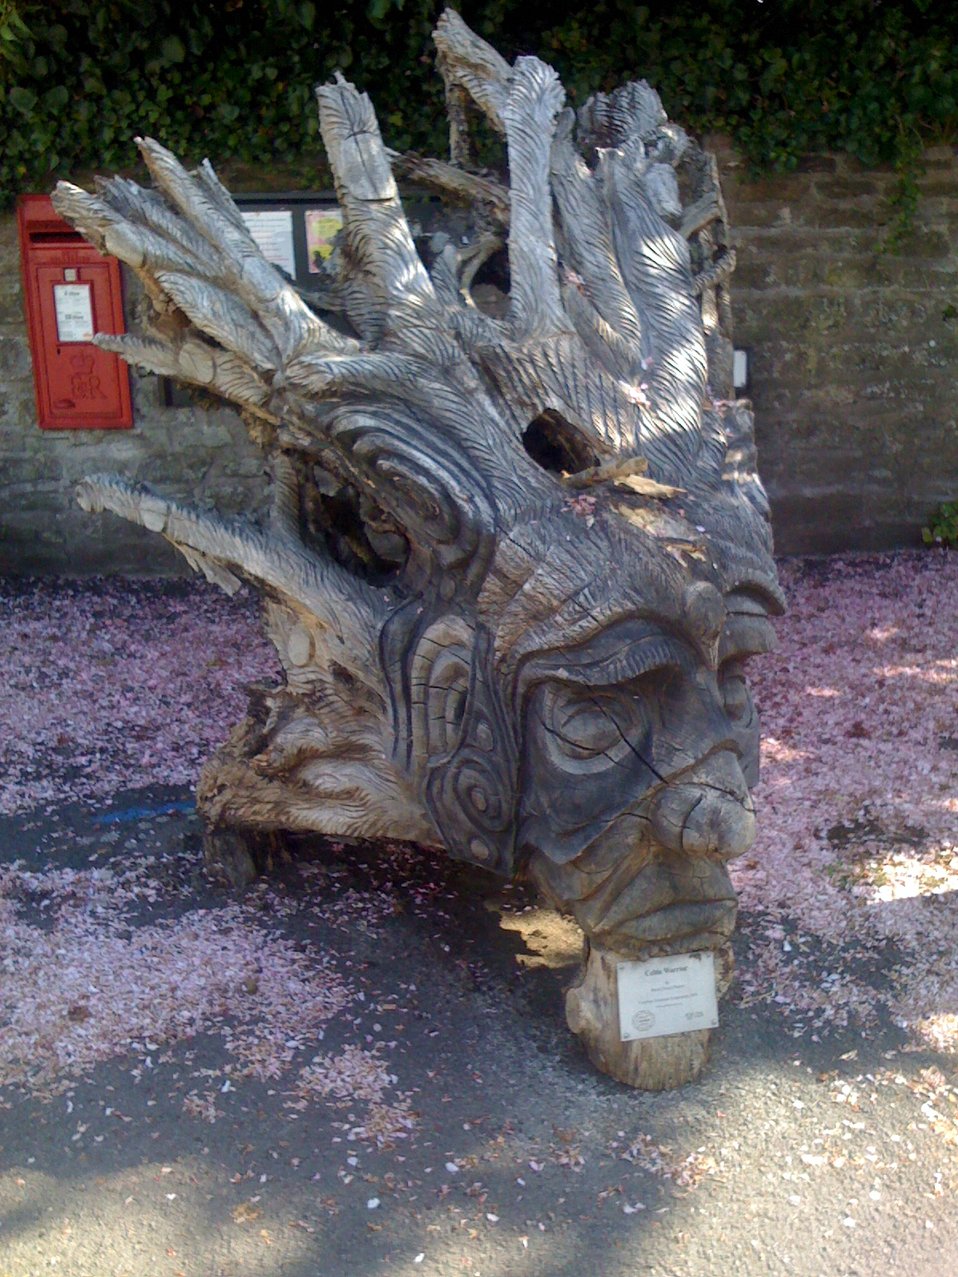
Tree sculpture, Caerleon